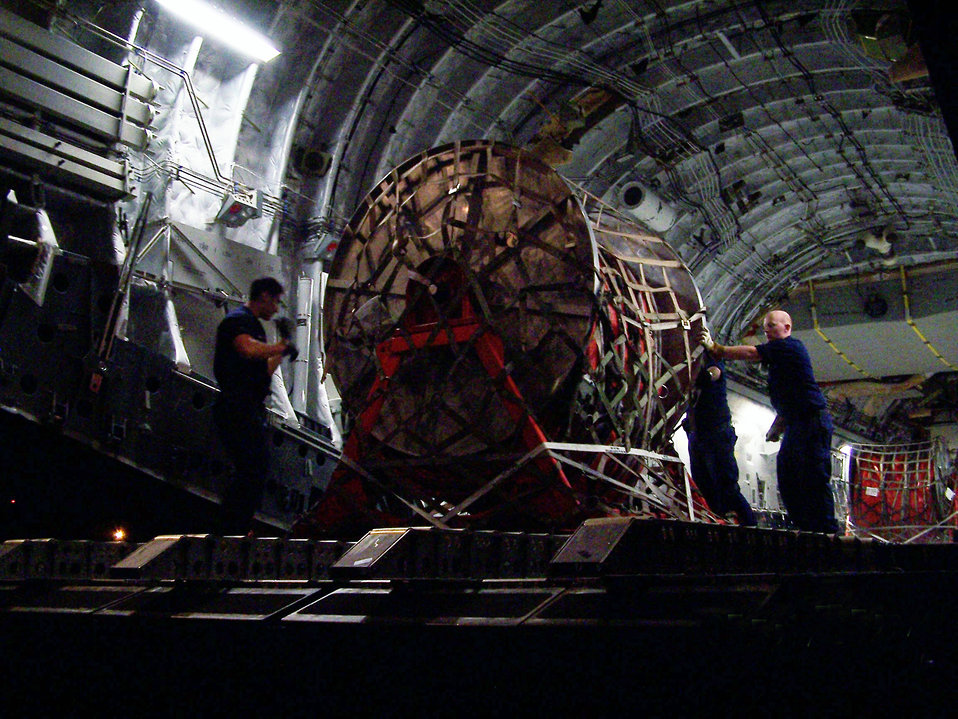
Airmen assist Coast Guard

A Coast Guard crew offloads rolls of inflatable boom from a C-17 Globemaster III May 5, 2010 from Travis Air Force Base, Calif. Active duty and Air Force Reserve members from Travis AFB partnered with Coast Guard members May 2, 2010 to get equipment to the Gulf of Mexico to assist with oil clean up efforts.